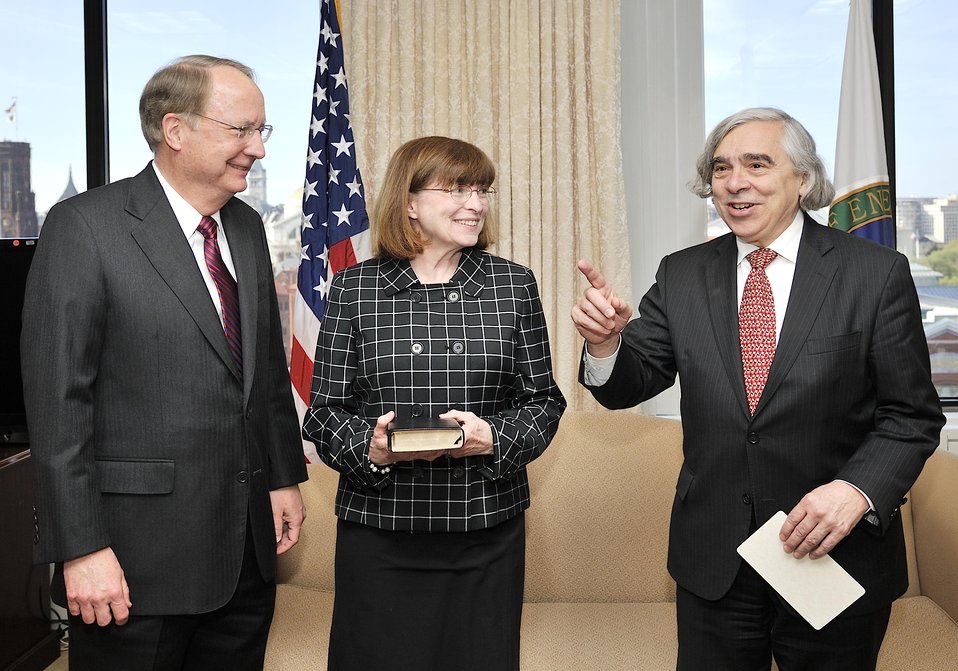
Secretary of Energy Ernest Moniz prepares for swearing in of Frank G. Klotz as the Department of Energy’s Undersecretary for Nuclear Security and NNSA Administrator in a private ceremony this afternoon. General Klotz was joined by his wife, Nancy, and Acting Administrator Bruce Held on April 17, 2014 .